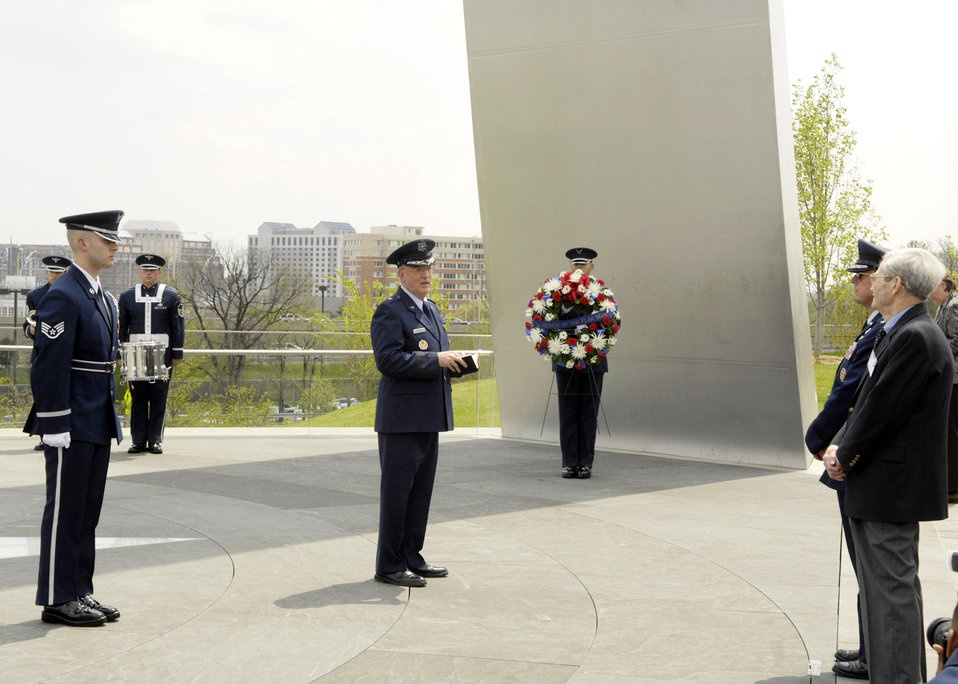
WWII bomber crew awarded Distinguished Flying Cross

A wreath-laying ceremony in honor of the